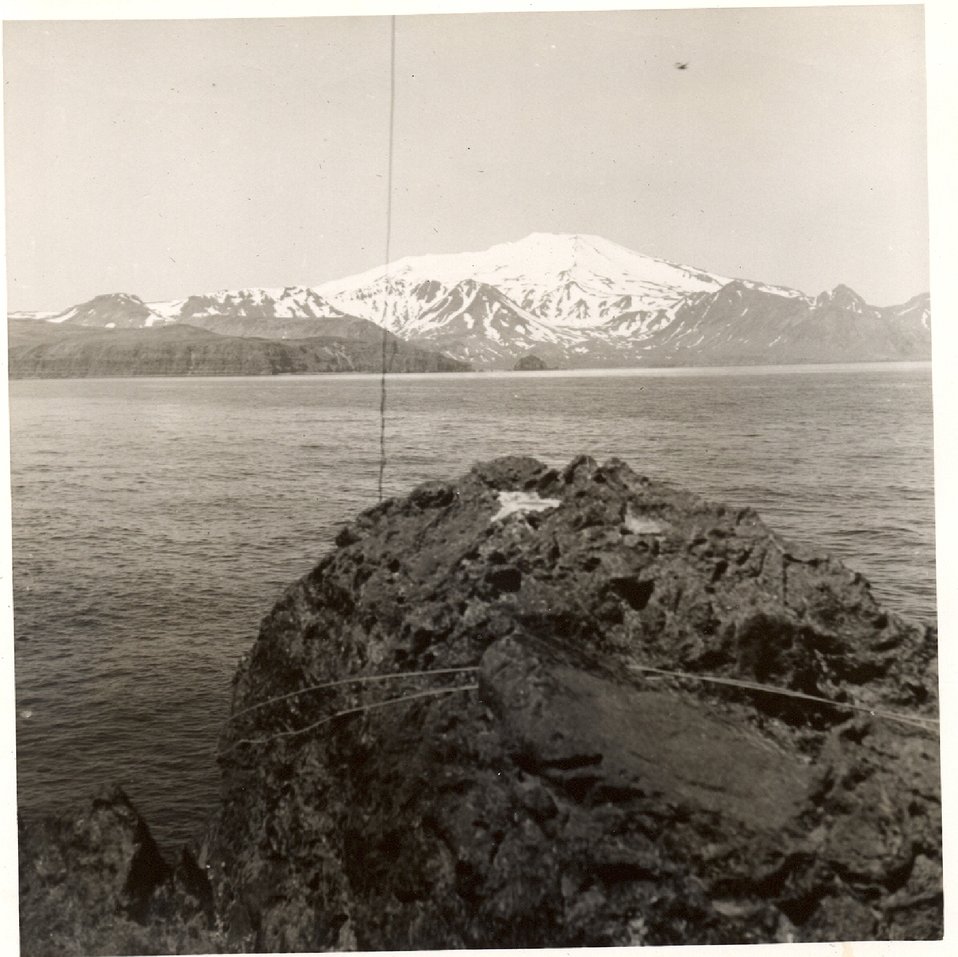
Coastal view.